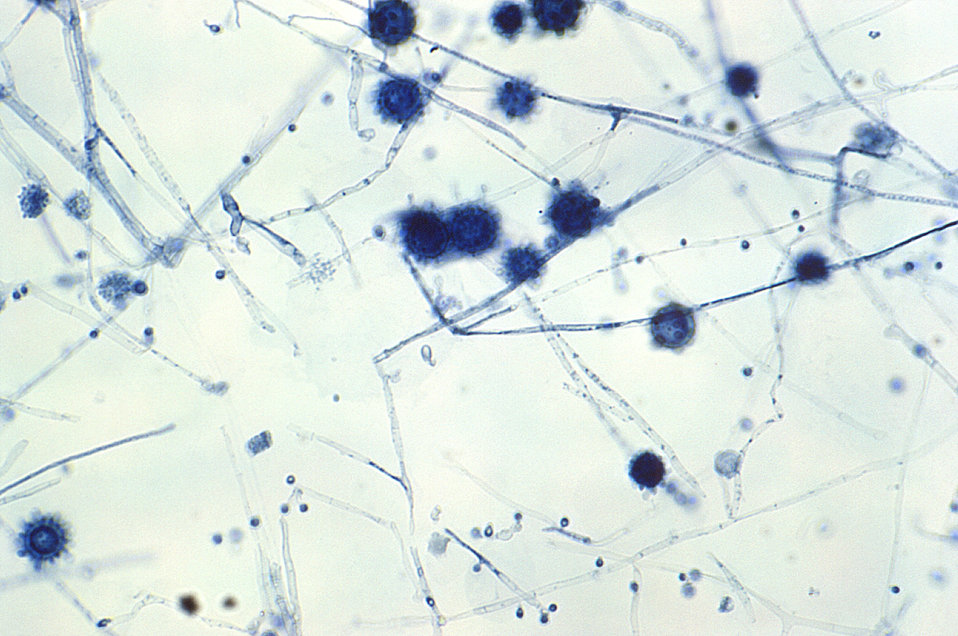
At a magnification of 400X, this photomicrograph revealed some of the ultrastructural morphology exhibited by Histoplasma capsulatum fungal macroconidia and macroconidia, which were isolated from Israeli soil samples.